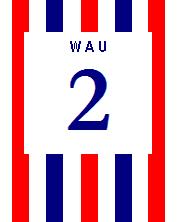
Français : maillot football shirt Deutsch: Fussballtrikot